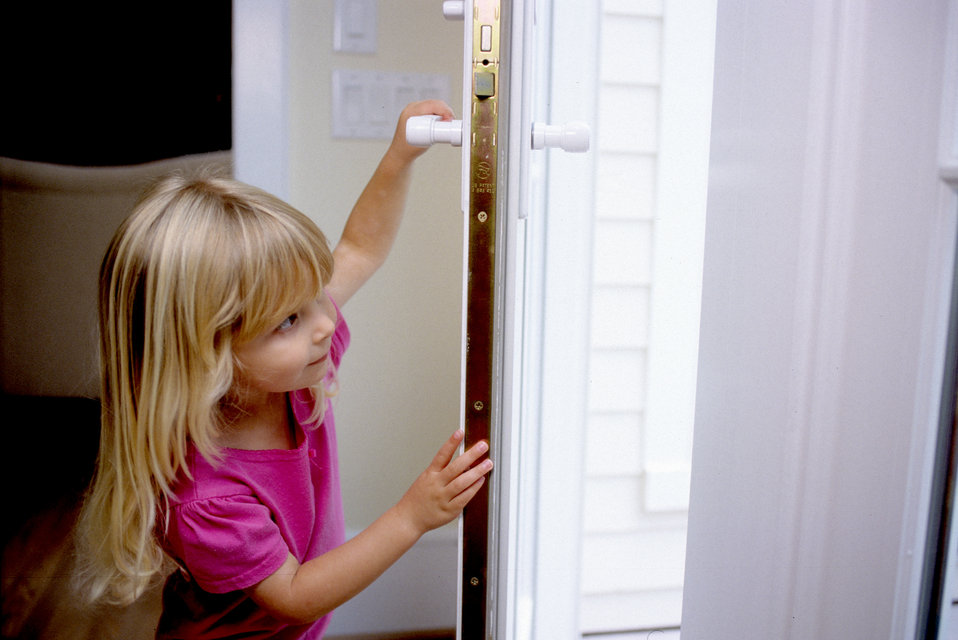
Young girl opening a door

This is one of three images which depicted three different scenarios taking place at the same residential rear door involving three different people in the process of exiting the residence to the home's back deck. This particular image showed a young girl who did not appear to be mobility-challenged, standing at this door, which was slightly opened, and was looking outside just before she was about to exit the residence. The door itself was of wood frame construction with glass panels, side hinged, and operated by using a levered handle. Implementing a universal design, there was ample space around the door, and an exterior porch level with the first floor. The door's windows allowed residents the opportunity to see who was outside, a 36' width that provided for easy passage by all, and a low threshold that reduced the entry barriers to those with mobility problems, as well as the likelihood of tripping for all.